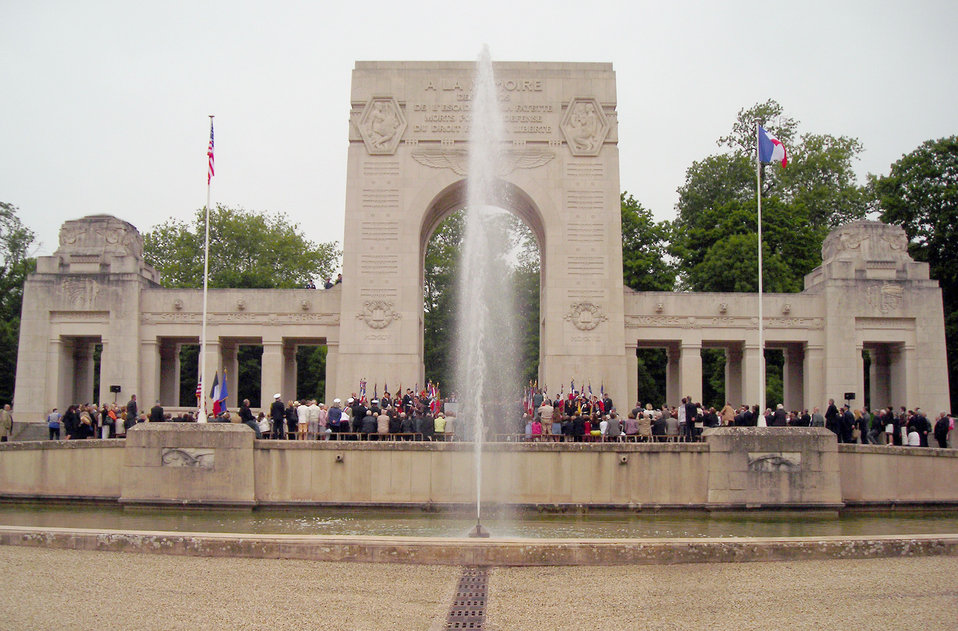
U.S., French remember America's first combat pilots

A crowd gathers to see a ceremony May 27, 2010, at the Lafayette Escadrille Memorial outside of Paris honoring American and French pilots who died during World War I. U.S. and French civilian and military leaders paid their respects to America's first combat pilots during the ceremony. The Lafayette Escadrille Memorial is a reminder to all of the American pilots of the Escadrille La Fayette and the Lafayette Flying Corps who died during service to the Allies.